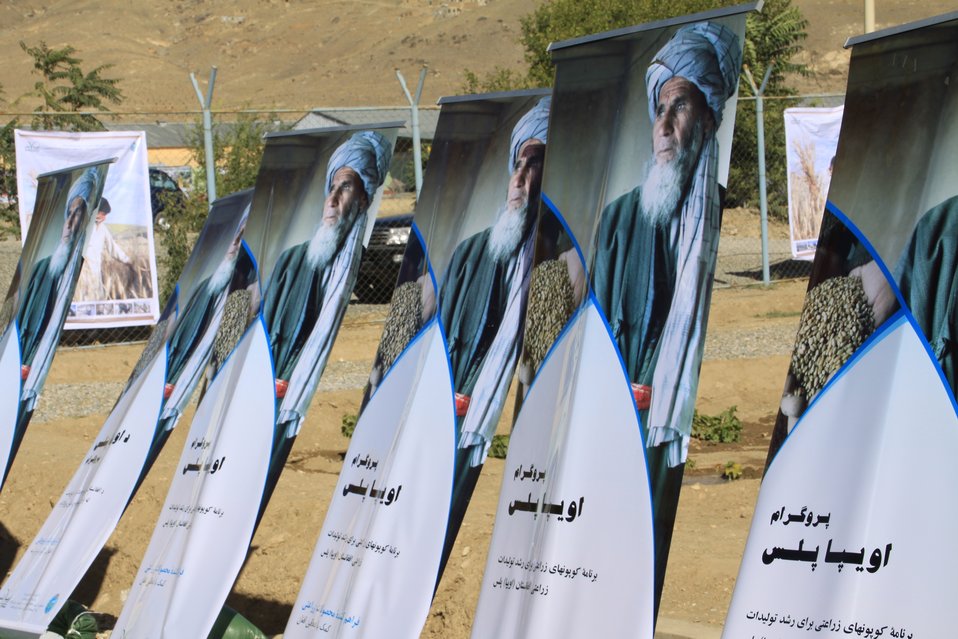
AVIPA Plus Wheat Seed Distribution 101005